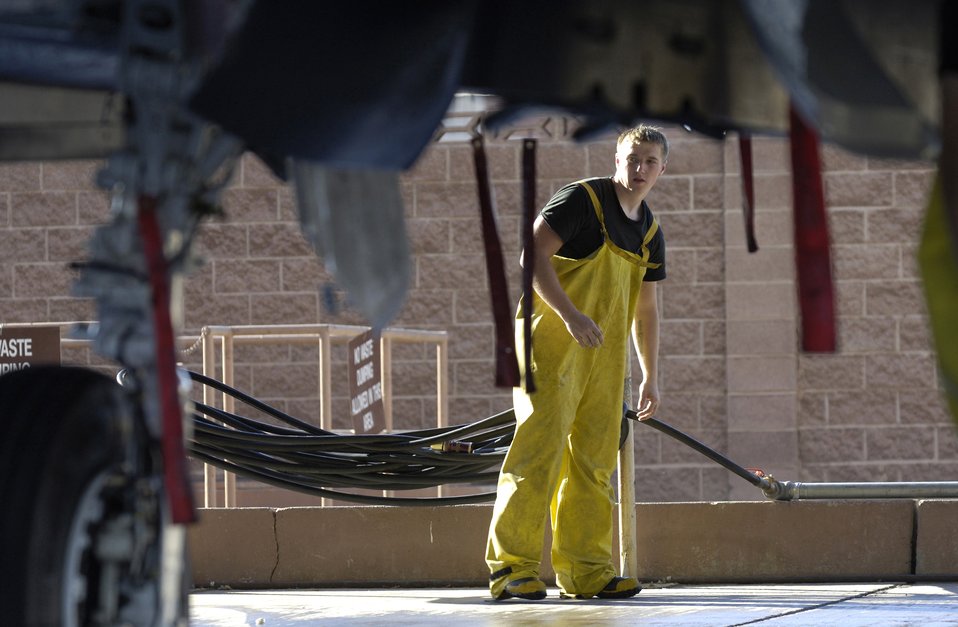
A Strike Eagle gets a bath

Airman 1st Class Dylan Edson takes one final look after washing an F-15E Strike Eagle during a 120-day periodic cleaning March 15 at Nellis Air Force Base, Nev. Airman Edson is an avionics specialist assigned to the 57th Aircraft Maintenance Squadron at Nellis.